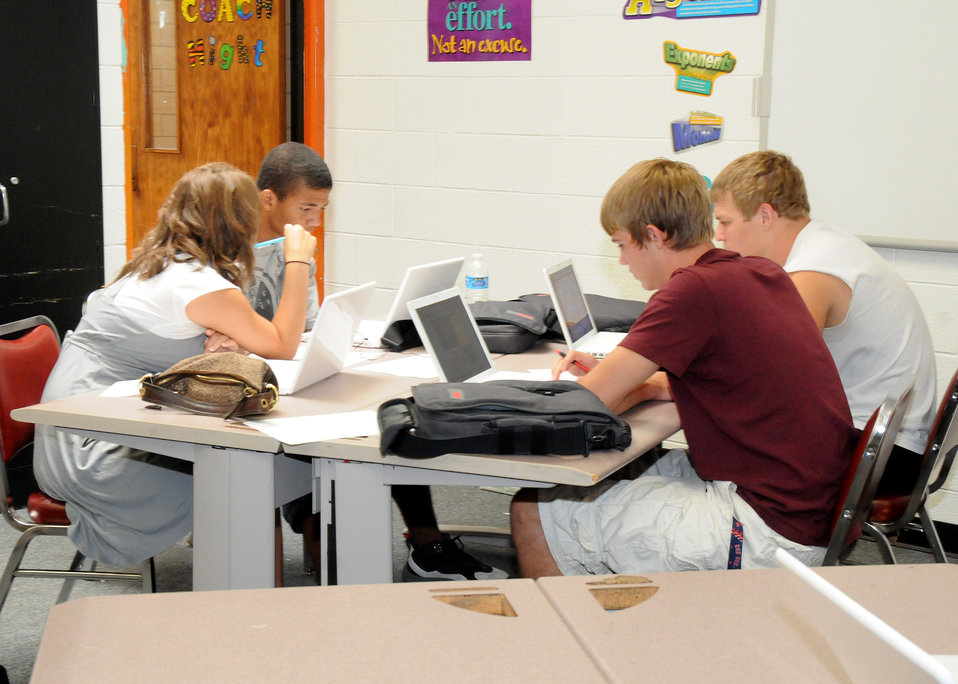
Every student at Crescent High School in Crescent, Oklahoma has access to a computer and the Internet to help with their education due to the U. S. Department of Agriculture (USDA) Rural Development (RD) Distance Learning and Telemedicine Program (DLT) allocated through the American Recovery and Reinvestment Act of 2009 (ARRA).